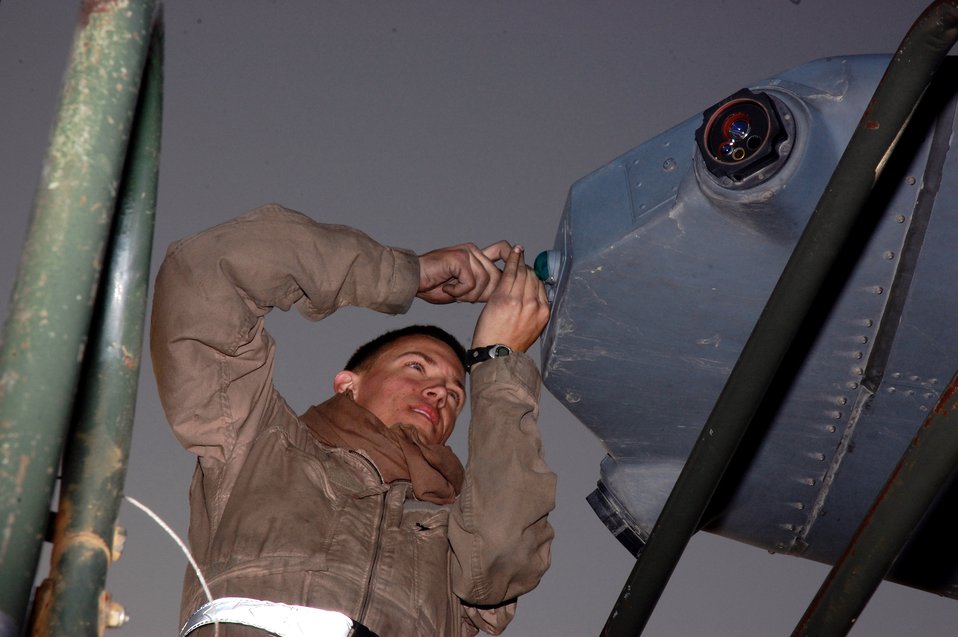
A tradition of honor; Service members share pride in service

Airman 1st Class Buddy Bewick works on the beavertail navigation light of a C-130 Hercules at a Southwest Asia air base in preparation for an air-drop mission in southern Iraq. Airman Bewick is a 386th Expeditionary Aircraft Maintenance Squadron crew chief deployed from Dyess Air Force Base, Texas.